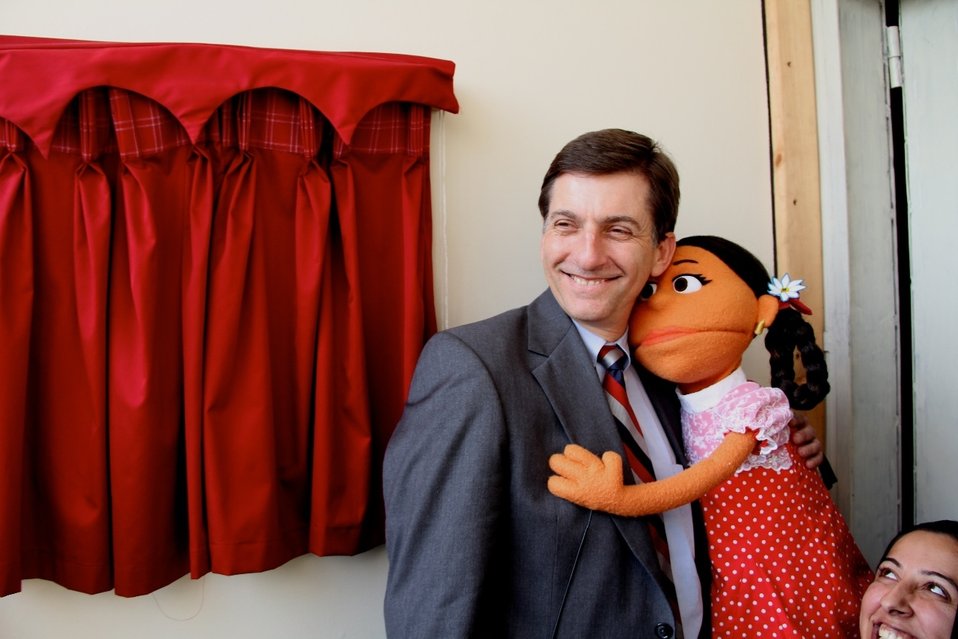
Mr. Andrew Sisson, Director USAID Mission with Rani,a lead Character in Sim Sim Hamara